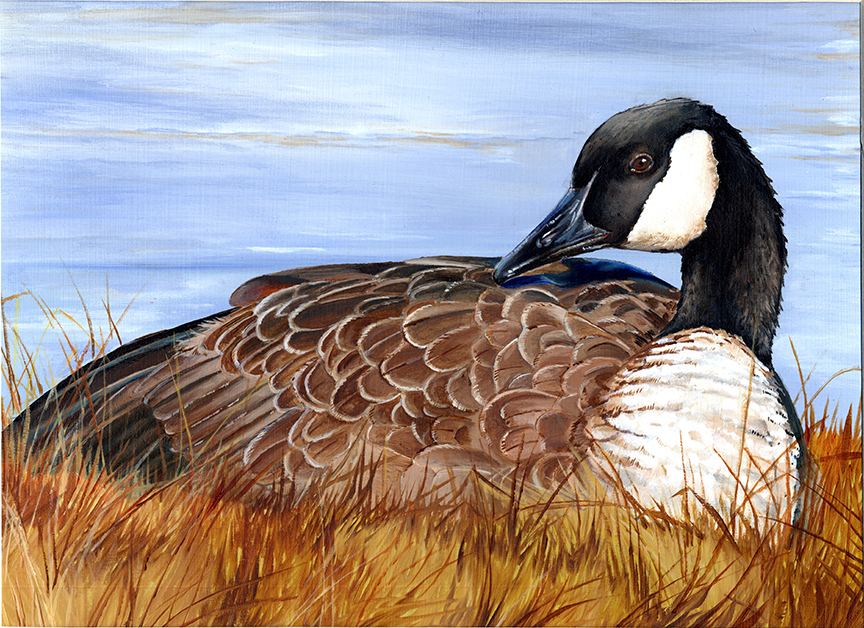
JRDuck2013MT

2013 Junior Duck Stamp Best of Show-Montana